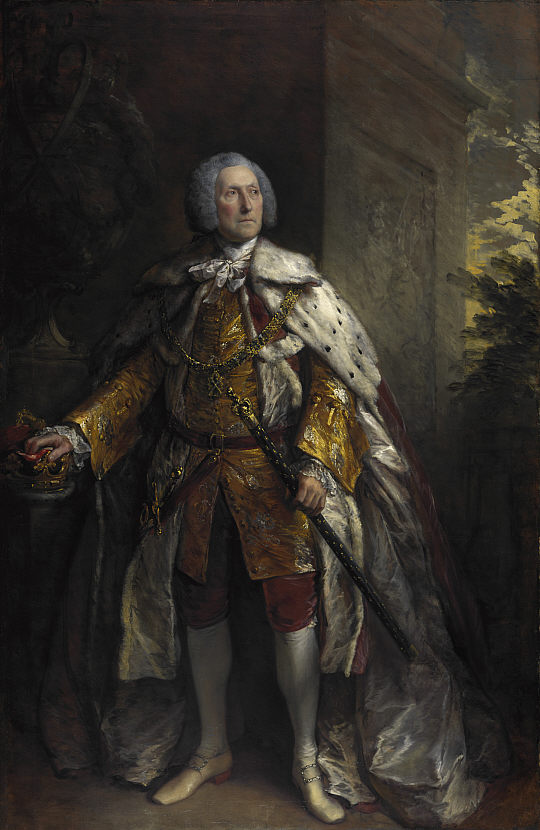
4thDukeOfArgyll